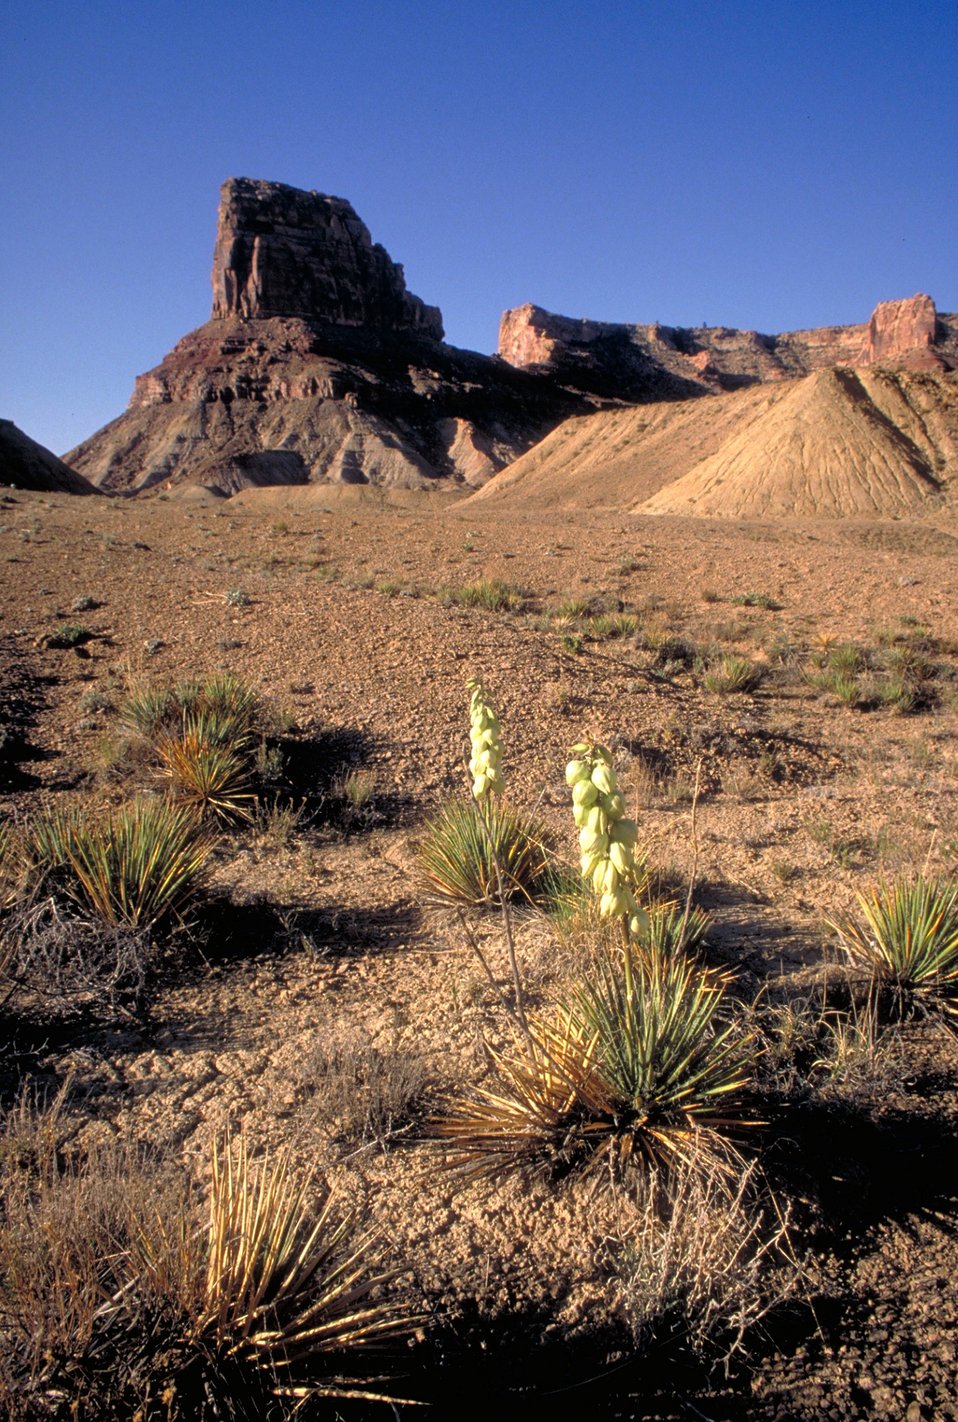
Bottleneck Peak, San Rafael Swell.